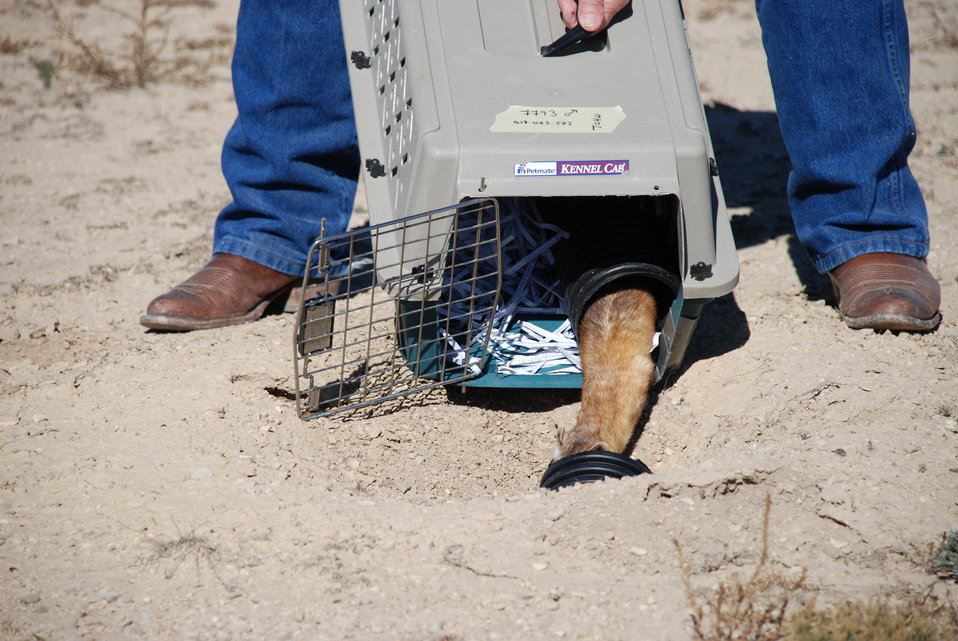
Black-footed Ferret Release

On Wednesday, October 30, 2013, thirty endangered black-footed ferrets were released onto cattle rancher Gary Walker's land, west of Pueblo, Colorado.

The release launched a potentially new way of preserving endangered species and was accomplished by way of a Safe Harbor Agreement (SHA). This SHA provides opportunities for private and Tribal landowners to volunteer their lands for reintroductions of this endangered species without affecting their land-use activities beyond mutually agreed-upon measures. It also extends these assurances to surrounding non-participating lands and other landowner interests. This SHA will be an important step in promoting the recovery of this iconic species.